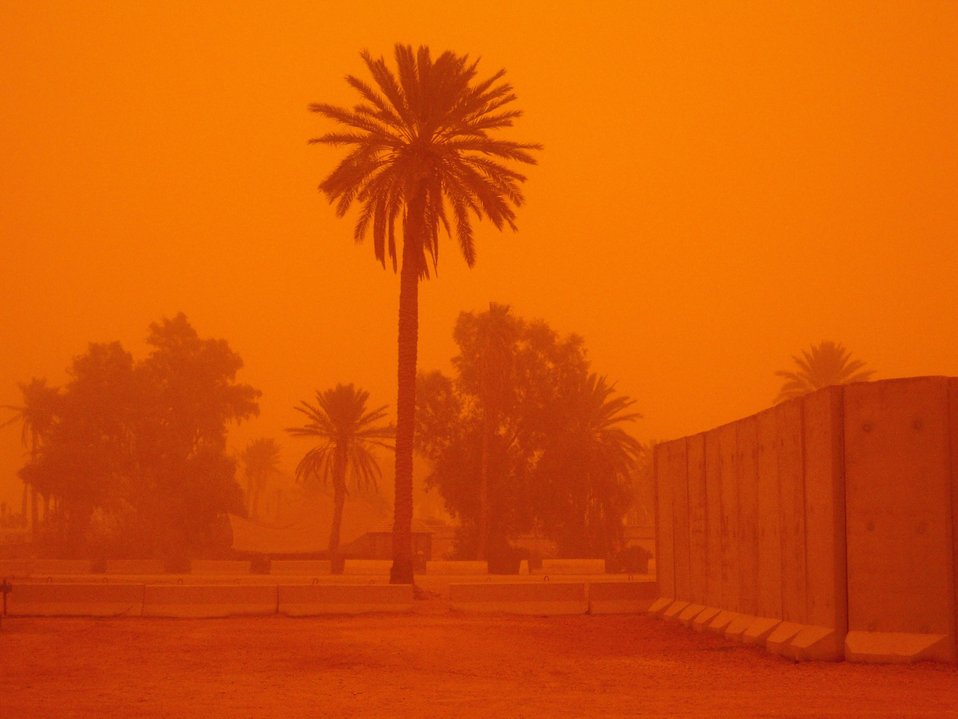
Dust Storm at Camp Ramadi in Anbar Province

A PRT Anbar team member takes a photo during the dust storm in Anbar Province, Iraq, February 22, 2010.